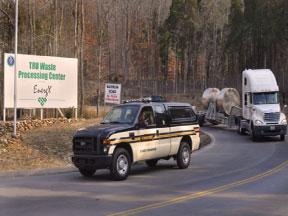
Remote-Handled Transuranic Waste leaving Oak Ridge

The Department of Energy works closely with the Tennessee Highway Patrol to conduct an extensive inspection of transport trucks carrying Remote-Handled Transuranic Waste prior to shipments leaving Oak Ridge.
-
Departure of first shipment of Remote-Handled Transuranic Waste in a RH-72B shipping cask from Oak Ridge, Tennessee on February 26 for a 1,300 mile journey to the Waste Isolation Pilot Plant near Carlsbad, New Mexico.